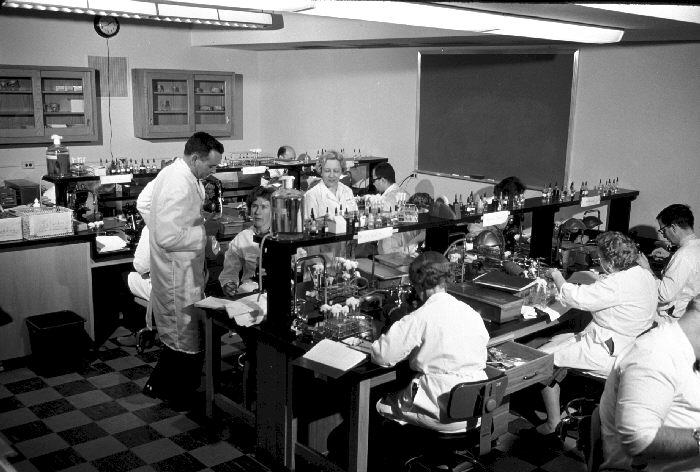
CDC Laboratorians in Training